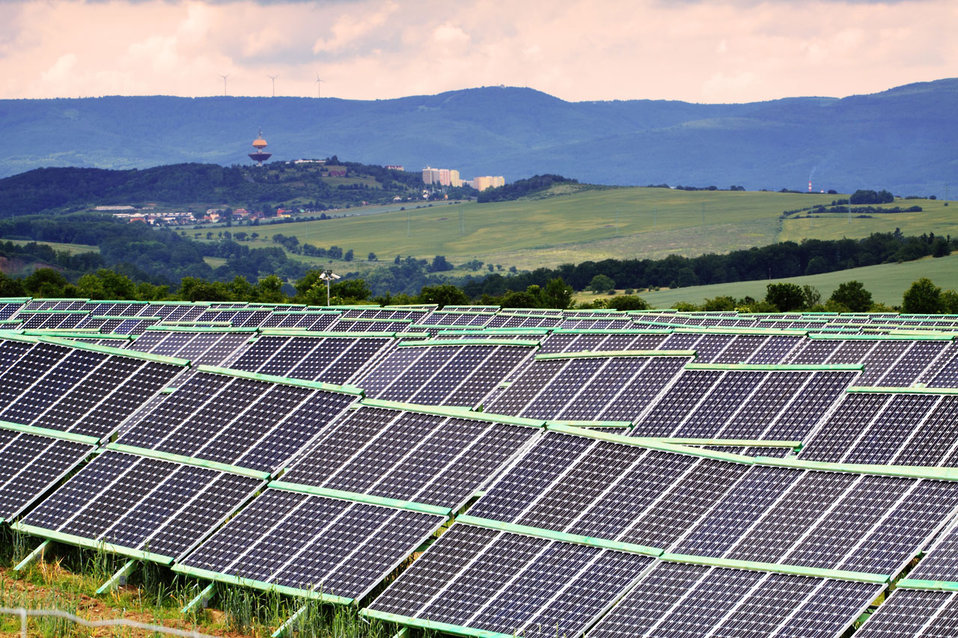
Solar power plant with wind turbines in the background.